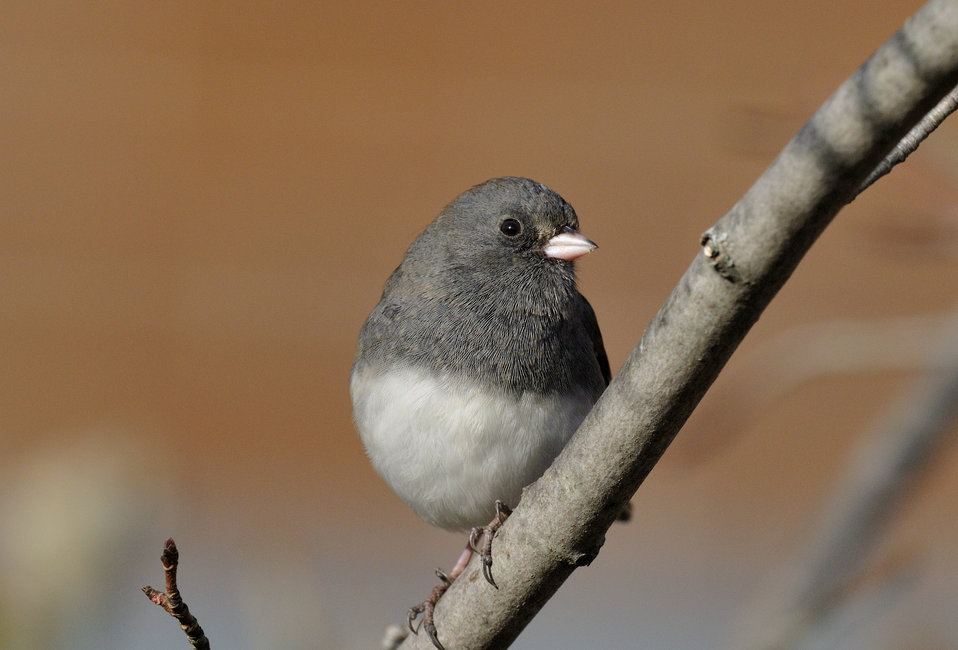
Dark-eyed Junco

Photographed outside the Regional Office in Hadley, MA.